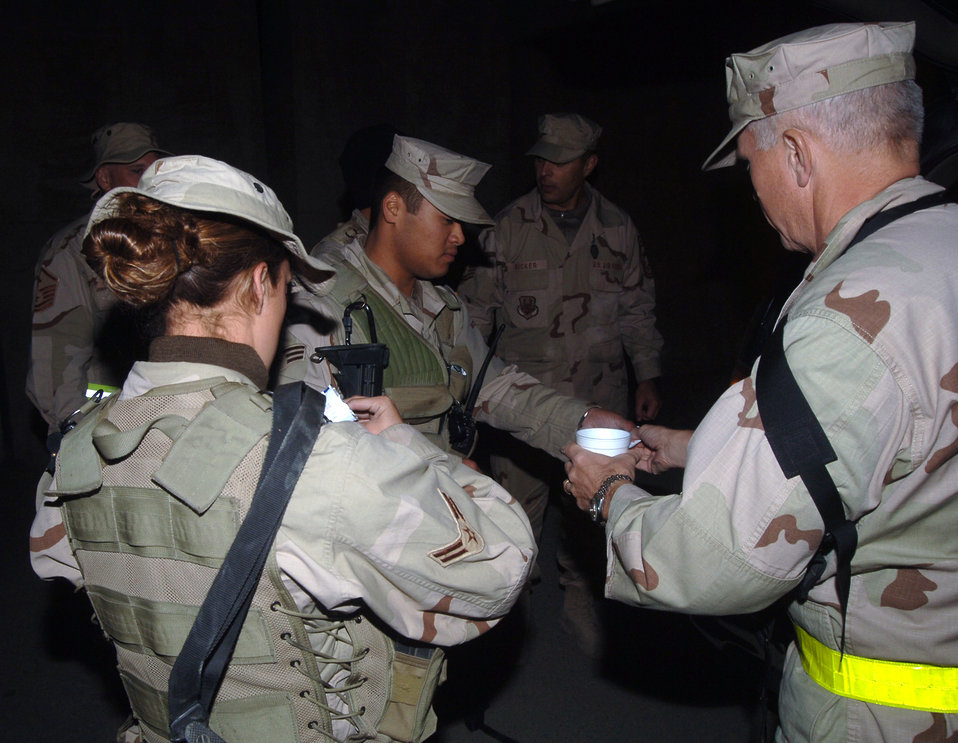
Keeping them Warm

BAGRAM AIRFIELD, Afghanistan (AFPN) -- Brig. Gen. Bruce Burda hands out hot chocolate to Airman 1st Class Chelsea Goodwin (left) and Senior Airman Kenneth Wang. The 455th Air Expeditionary Wing commander, along with his command chief and first sergeants, spent Thanksgiving evening distributing hot chocolate, cookies, candy and hand warmers to Airmen working flightline operations. Airman Wang, from Carrollton, Texas, is deployed from Yokota Air Base, Japan, while Airman Goodwin, from Ceres, Calif., is deployed from Kadena Air Base, Japan. Both are in the 455th Expeditionary Security Forces Squadron.